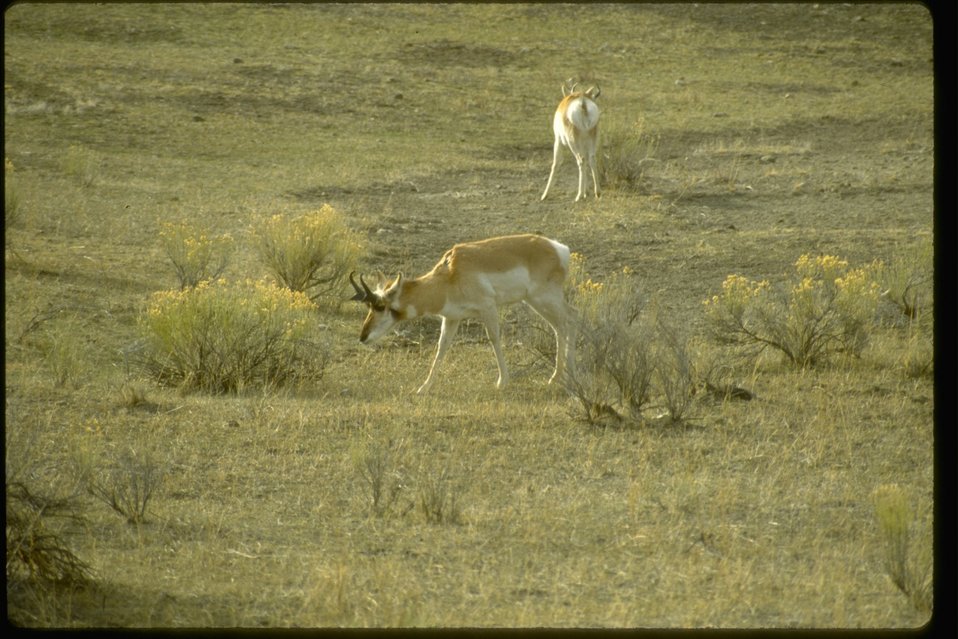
Two Prong Horned Antelope grazing.